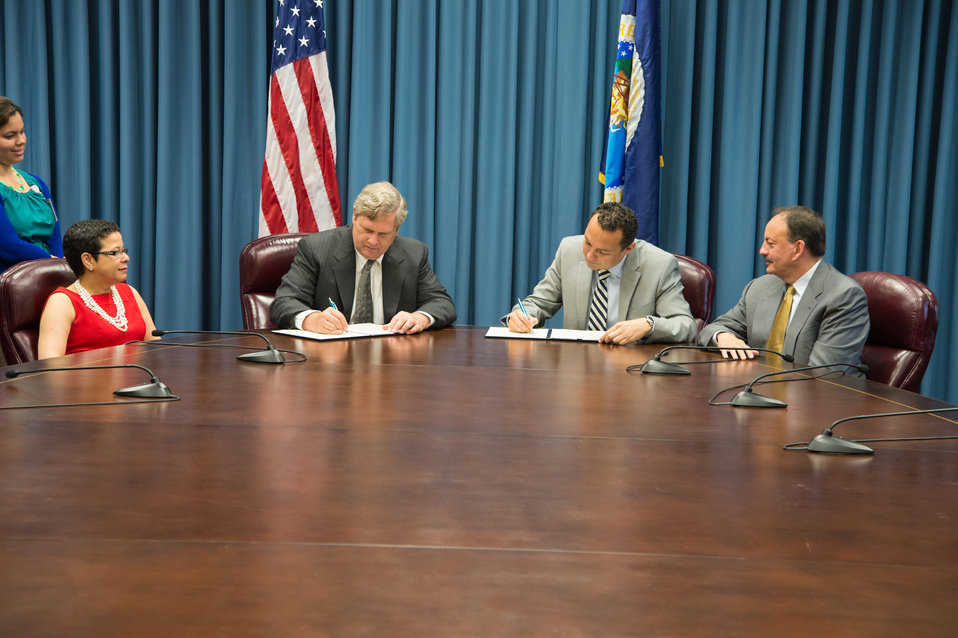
Agriculture Secretary Tom Vilsack and National Hispanic Leadership Agreement and Labor Council Executive Director Hector Sanchez sign a Memorandum of Understanding (MOU) strengthening the U.S. Department of Agriculture’s (USDA) commitment to Hispanic employment and immigration reform at USDA in Washington, D.C. on Thursday, May 22, 2014.